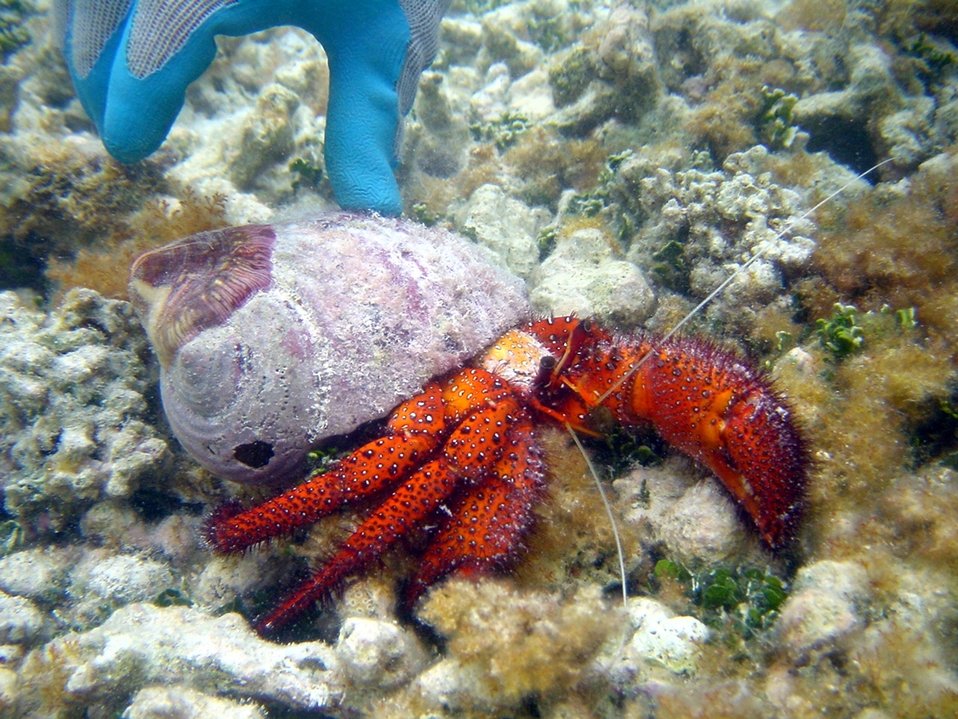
A large white-spotted hermit crab ( Dardanus megistos). Note divers hand for scale.